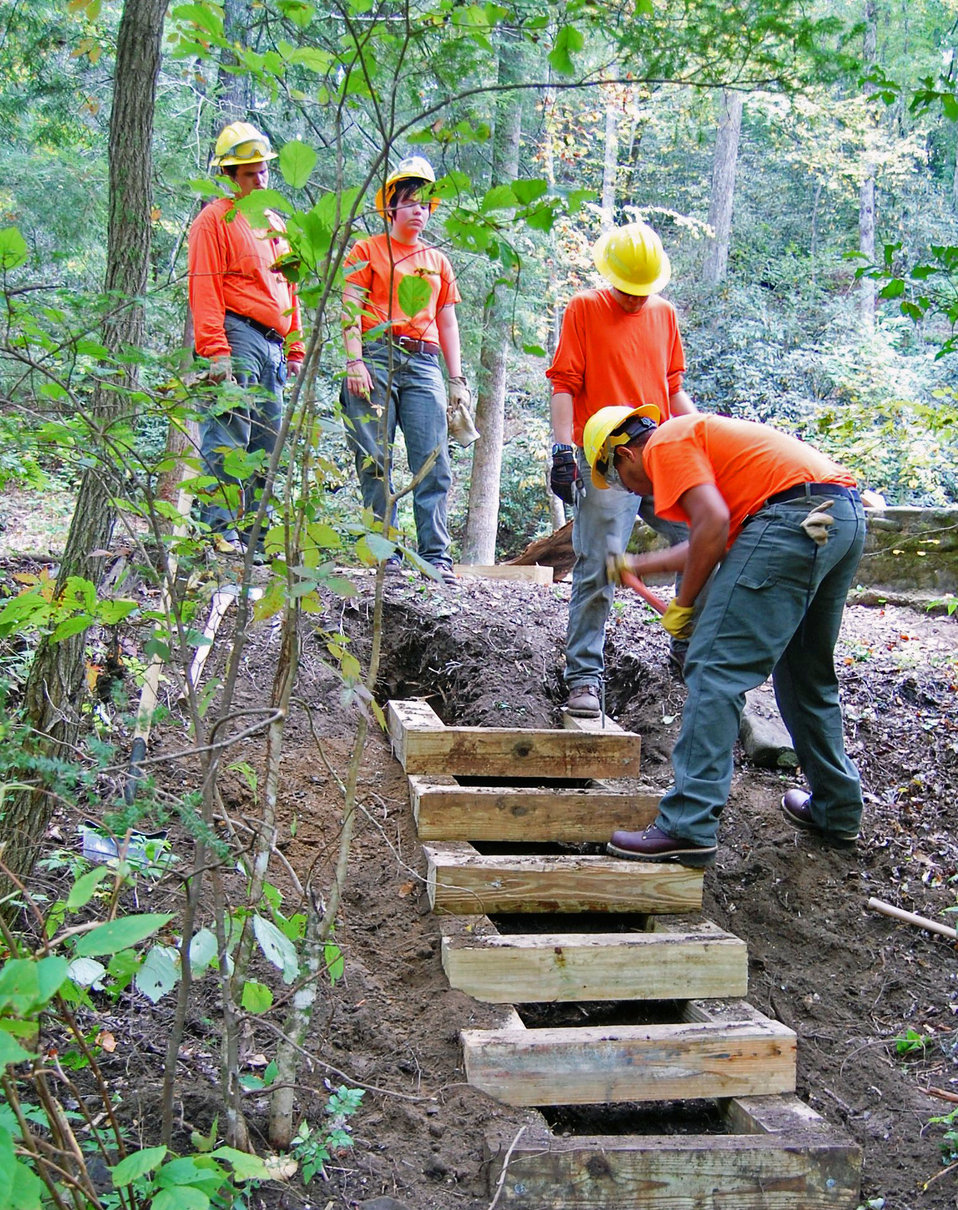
A North Carolina Forest Service Job Corps student group improves a historic site at the Nantahala National Forest in NC on Sept. 29, 2012.